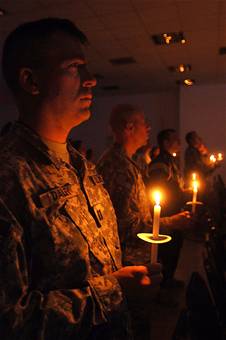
Many faiths, many holidays

Army Capt. Jeffrey Daley and other servicemembers celebrate Christmas Eve during a candlelight service in Gilbert Memorial Chapel at Joint Base Balad, Iraq. Captain Daley is the officer in charge of administrative support for the 51st Expeditionary Signal Battalion, which is deployed from Fort Lewis, Wash.